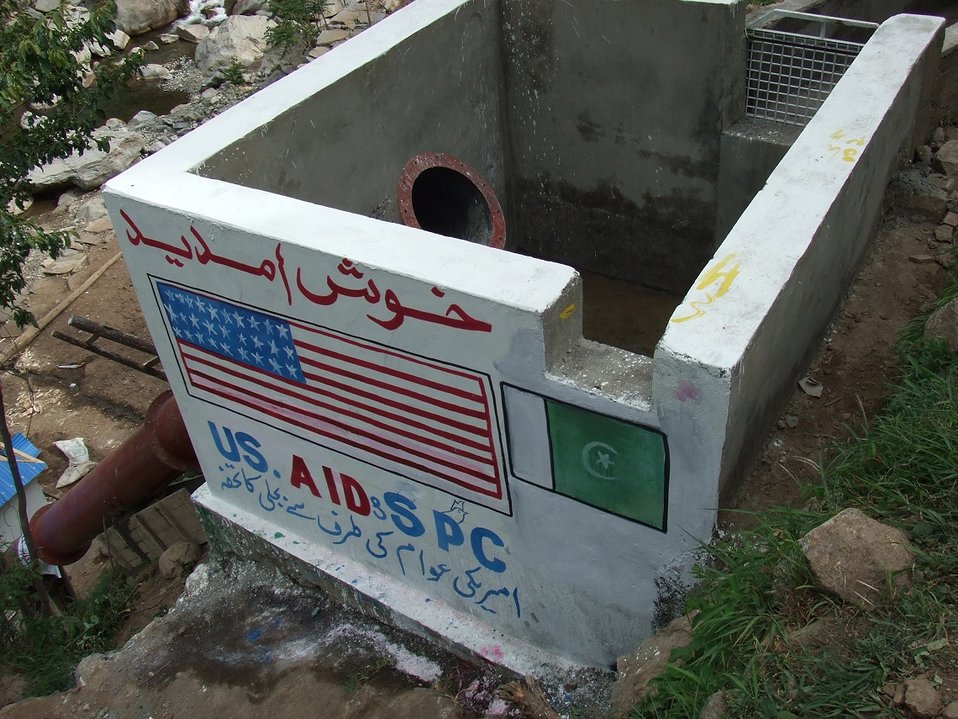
USAID Power Project

A new wave of energy has swept a remote village of Matta Tehsil. Children are excited, elders relieved. Electricity had lit their dark houses after over six decades of independence and connected them to the modern world.
“We can now watch cartoons on the TV just like all the other children,” said an excited child during the inauguration of a micro-hydropower station on Saturday.
The community-based power station, which will supply electricity to about 110 households in Swatai village, has been installed with the assistance of Small Grants Ambassador Fund Program of the USAID in collaboration with the Swat Participatory Council (SPC).